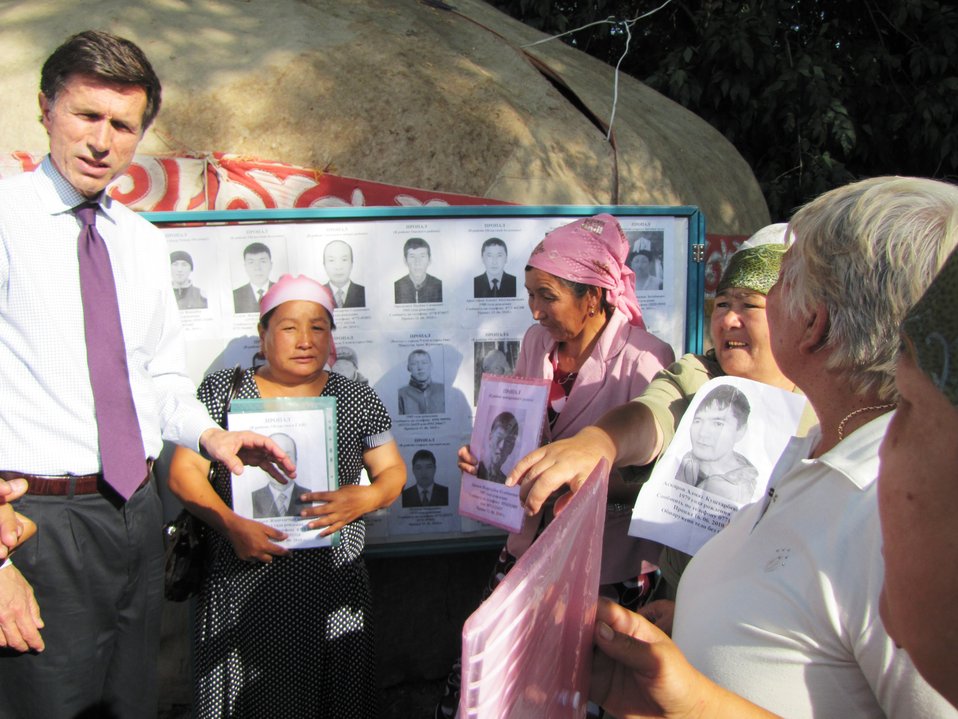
Assistant Secretary Blake Meets With Ethnic Kyrgyz Women

U.S. Assistant Secretary for South and Central Asian Affairs Robert O. Blake meets with ethnic Kyrgyz women whose husbands and sons went missing after the mid-June riots in Osh, Kyrgyzstan, on July 19, 2010.